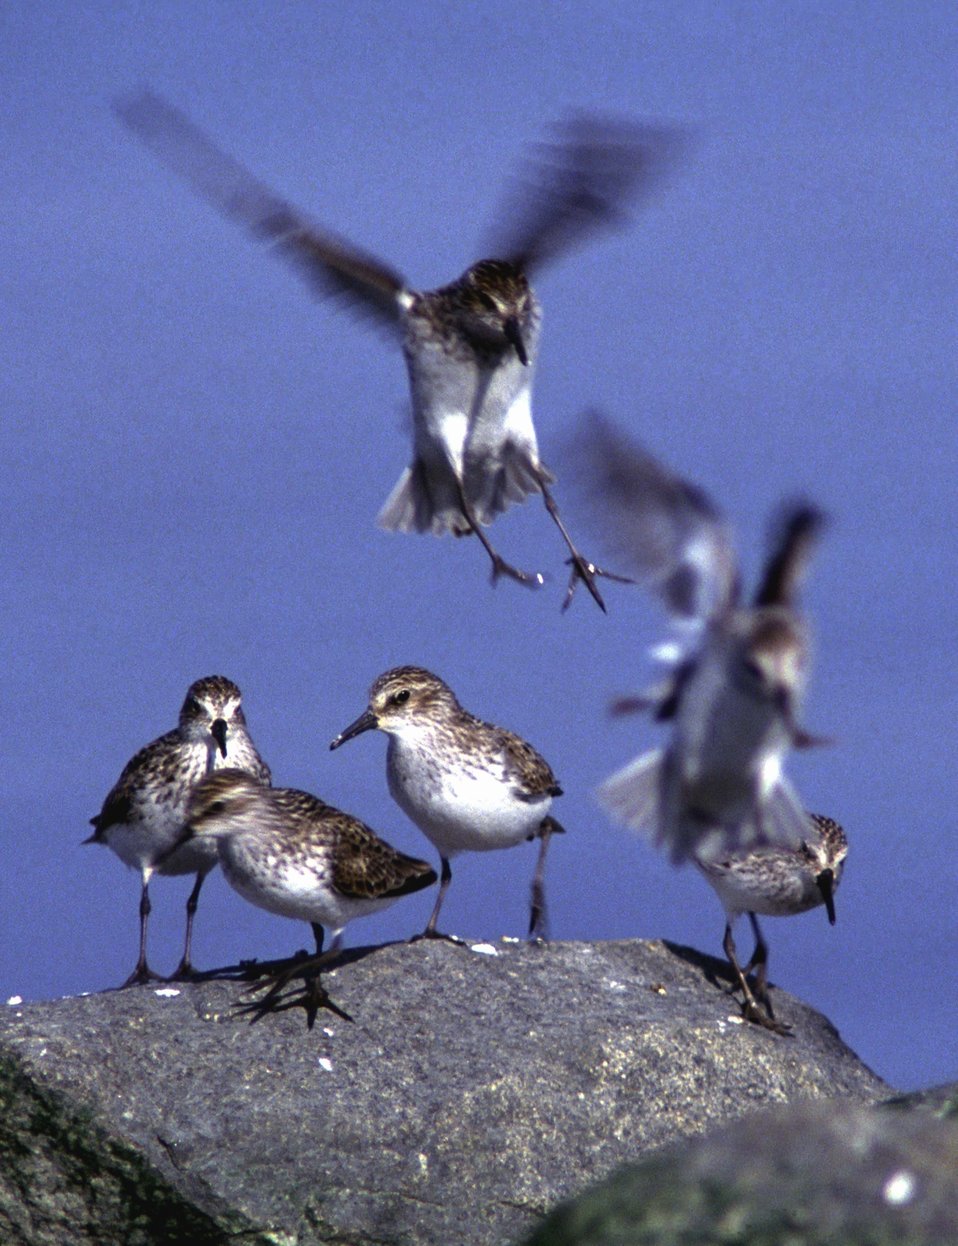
Sandpipers

Pt. Mahon, DE.